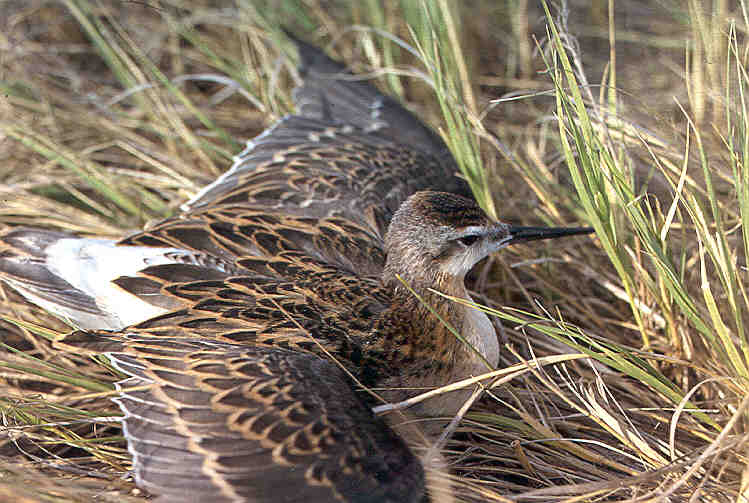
Male Wilson's phalarope, Bowdoin NWR. This male is trying to distract the 'predator', or the photographer away from his nest.